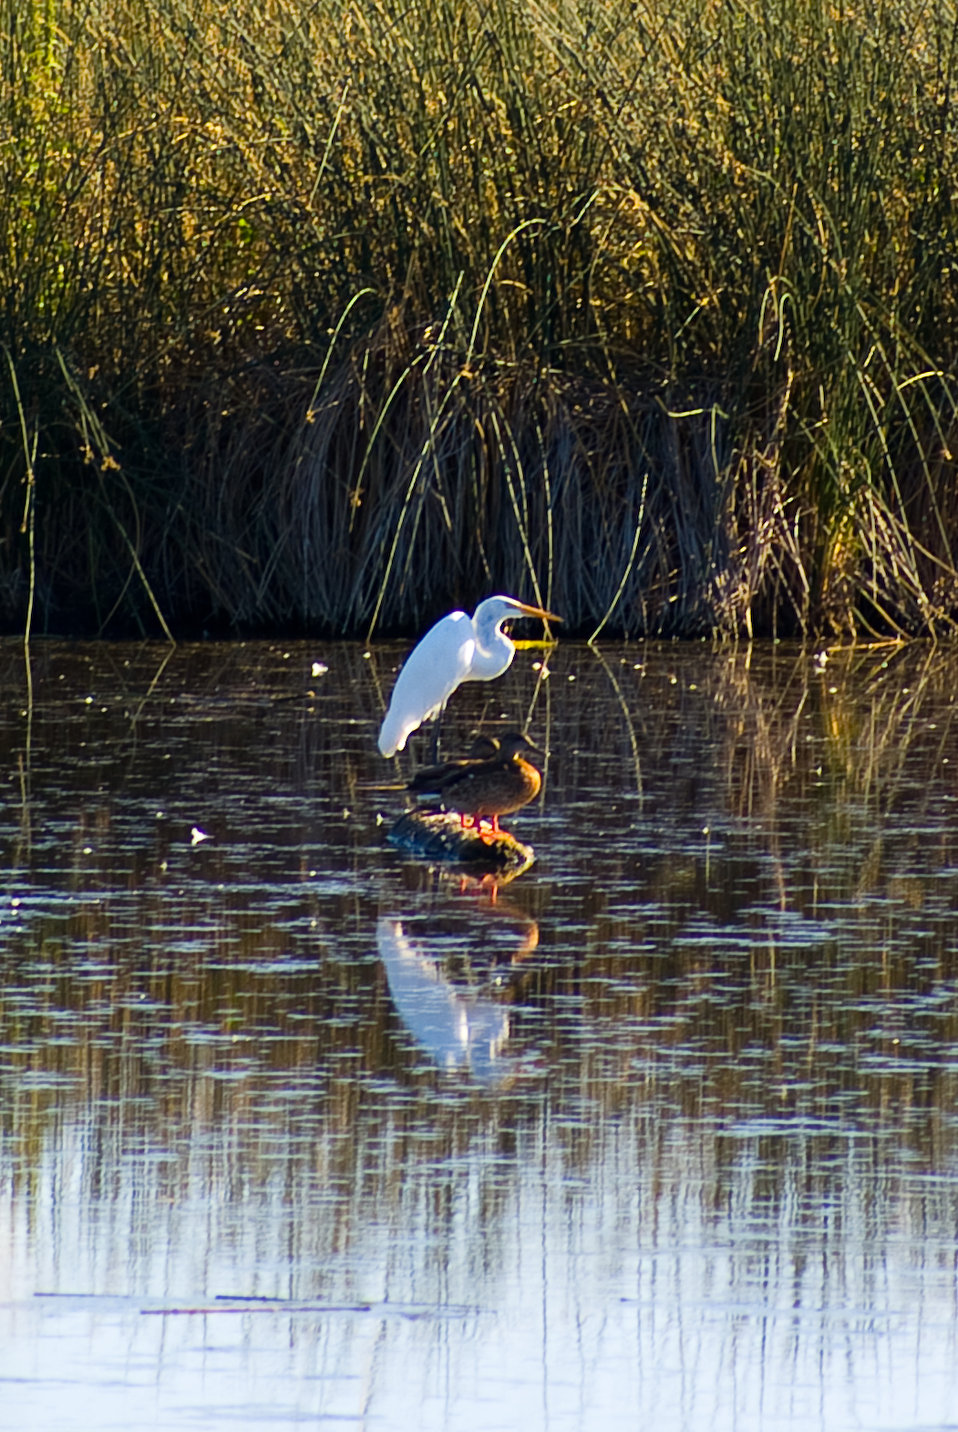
Egret and ducks

Taken August 25, 2010 at the Lower Klamath National Wildlife Refuge, CA